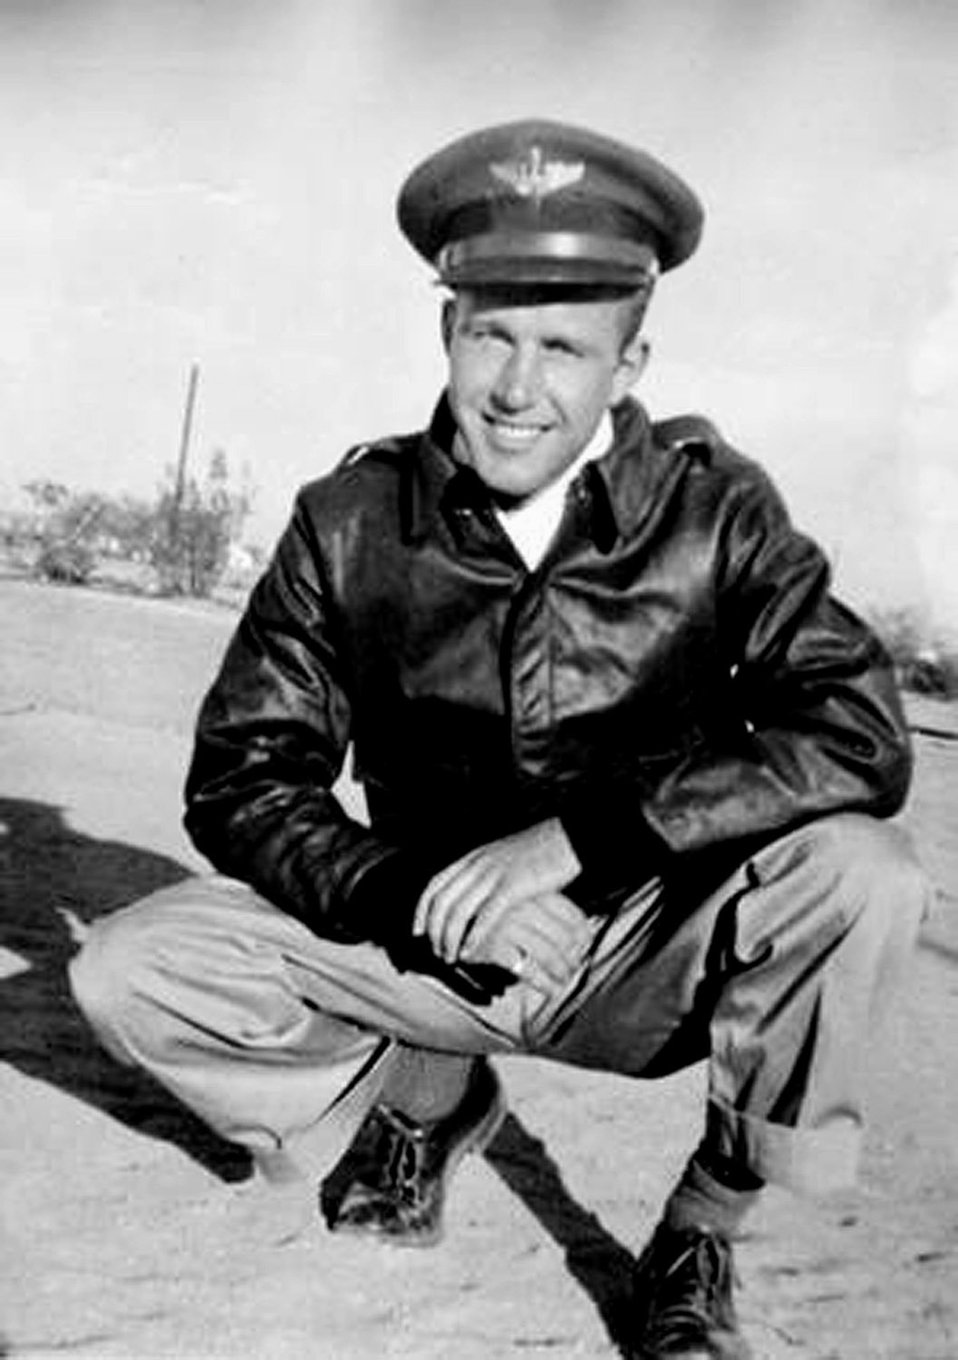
World War II B-24 pilot's remains laid to rest at Arlington

2nd Lt. Harold E. Hoskin is shown in 1943. Lieutenant Hoskin was one of five men who were flying in a B-24 Liberator that crashed while on a test flight Dec. 21, 1943, out of Ladd Field in Fairbanks, Alaska. Lieutenant Hoskin's remains were discovered in August 2006 and identified in April 2007. He was buried in a ceremony Sept. 7 at Arlington National Cemetery in Virginia.